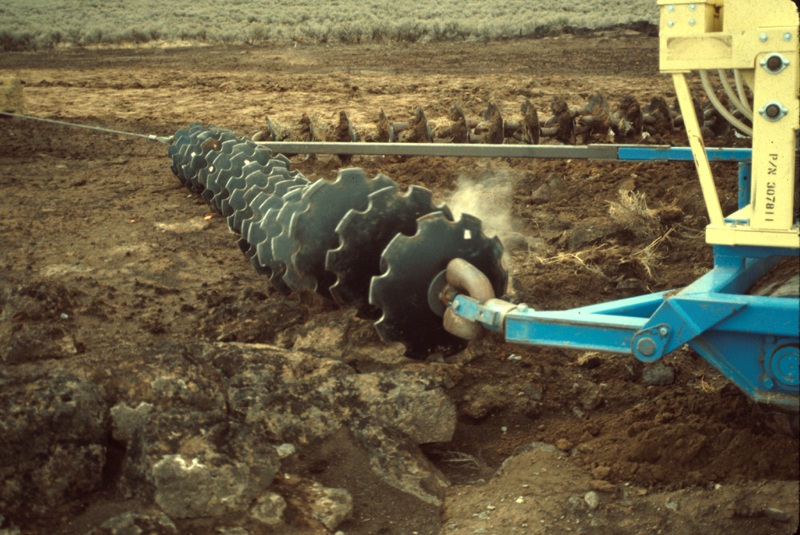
Diskchain at initial point Range Restoration Project Lower Snake River District